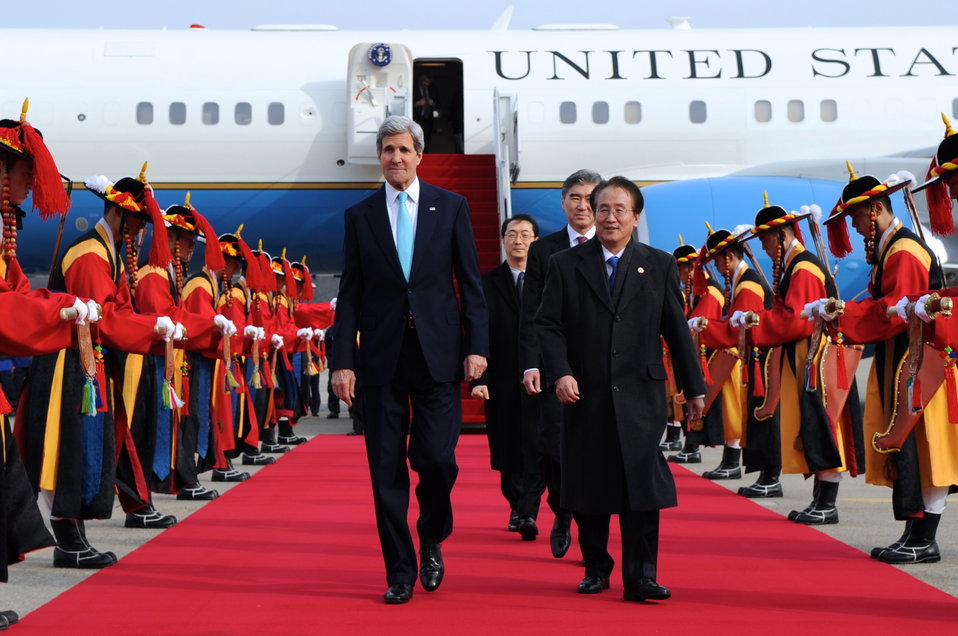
Secretary Kerry Greeted by Honor Guard as He Arrives in South Korea

U.S. Secretary of State John Kerry walks through a military honor guard as he arrives in Seoul, South Korea, for a visit with President Park Geun-hye and Foreign Minister Yun Byung-se on February 13, 2014.